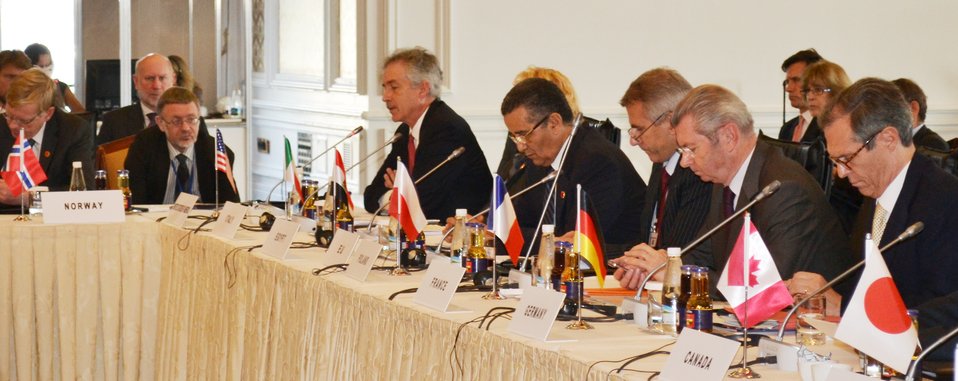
Deputy Secretary Burns Delivers Remarks

U.S. Deputy Secretary of State William J. Burns delivers remarks at the Istanbul Conference for Afghanistan at the Ciragan Palace in Istanbul, Turkey, on November 1, 2011.